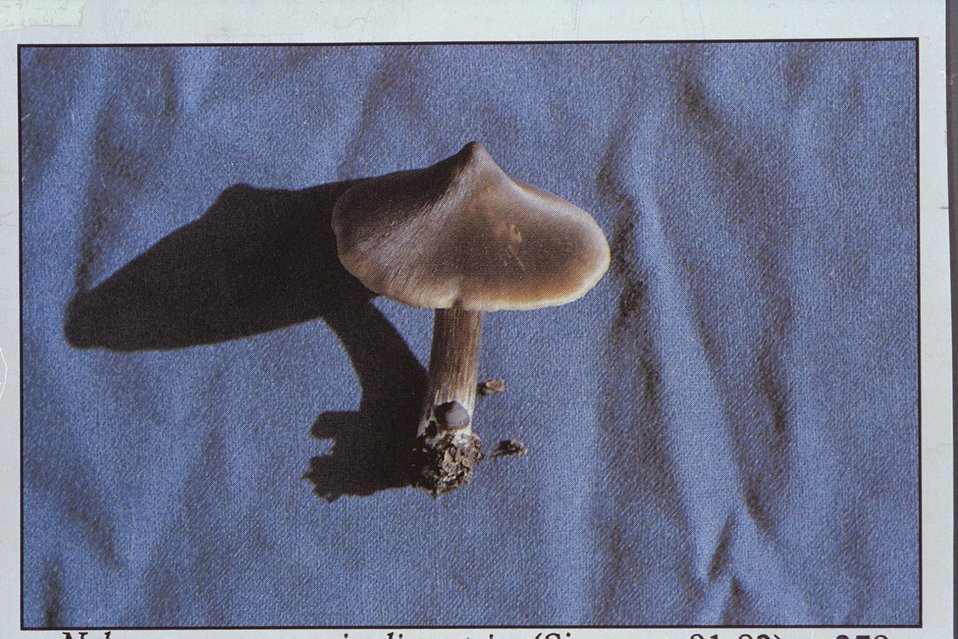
Medium shot of mushroom.